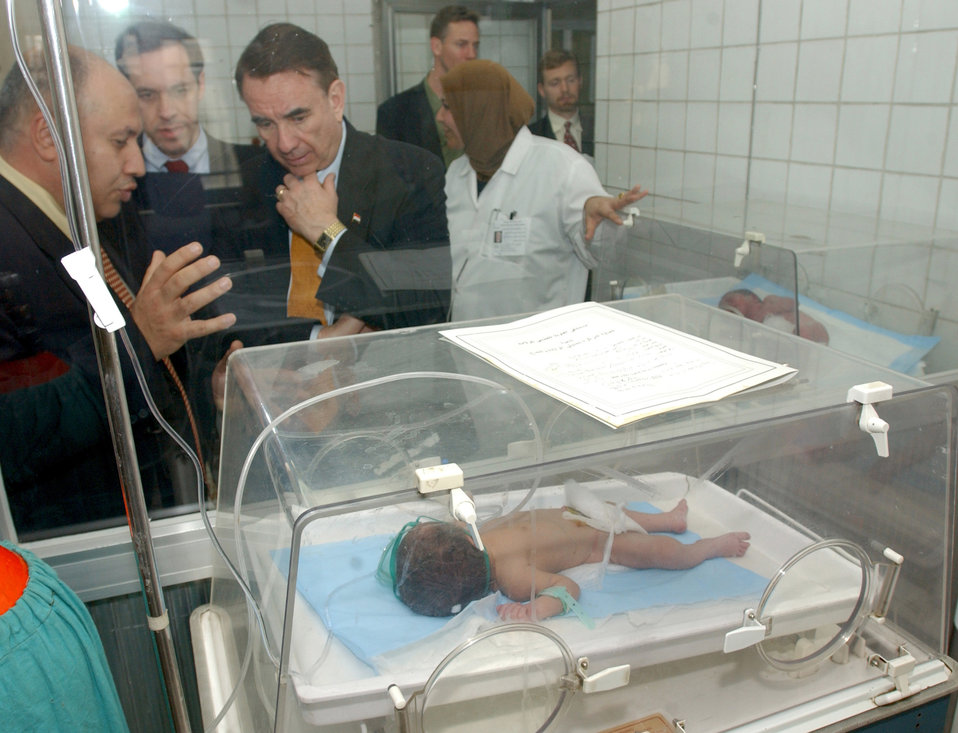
Iraqi Freedom

BAGHDAD, Iraq -- U.S Secretary of Health and Human Services Tommy G. Thompson, right, discusses Iraqi medical issues with a staff member of the Al Alaweaa maternity hospital, while viewing a newly born baby in an incubator here Feb. 29. Secretary Thompson visited Iraq on a mission of medical diplomacy to asses Iraqi medical needs.